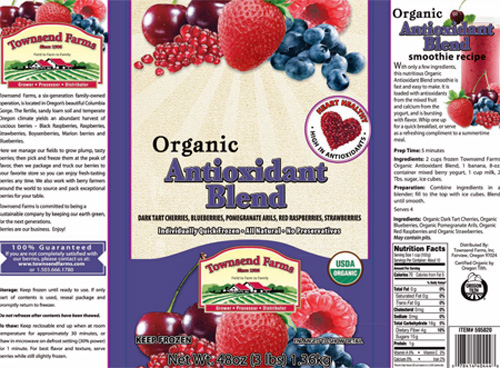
RECALLED – Organic Blend Antioxidant, Organic Antioxidant Berry Blend

June 28, 2013 – Product Recall – UPDATED RELEASE #3 UPC Code Clarification Townsend Farms, Inc. Expands Voluntary Limited Lot Recall of Frozen Organic Antioxidant Blend, 3 lb. Bag.